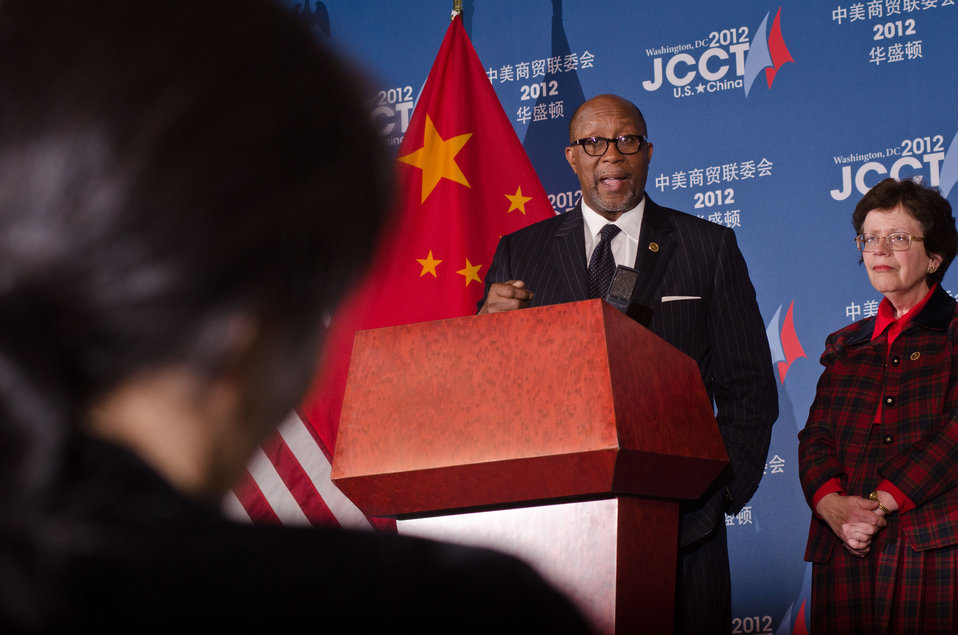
U.S. Trade Representative Ron Kirk and Acting U. S. Commerce Secretary Rebecca Blank responds to questions from international news media journalists at the 23rd Session of the U.S. China Joint Commission on Commerce and Trade (JCCT) at the Andrew W. Mellon Auditorium in Washington, D.C. on Wednesday, Dec. 19, 2012. The JCCT holds high-level plenary meetings on an annual basis to review progress made by working groups that focus on a wide variety of trade issues. These working groups meet throughout the year to address topics such as intellectual property rights, agriculture, pharmaceuticals and medical devices, information technology, tourism, commercial law, environment, and statistics.